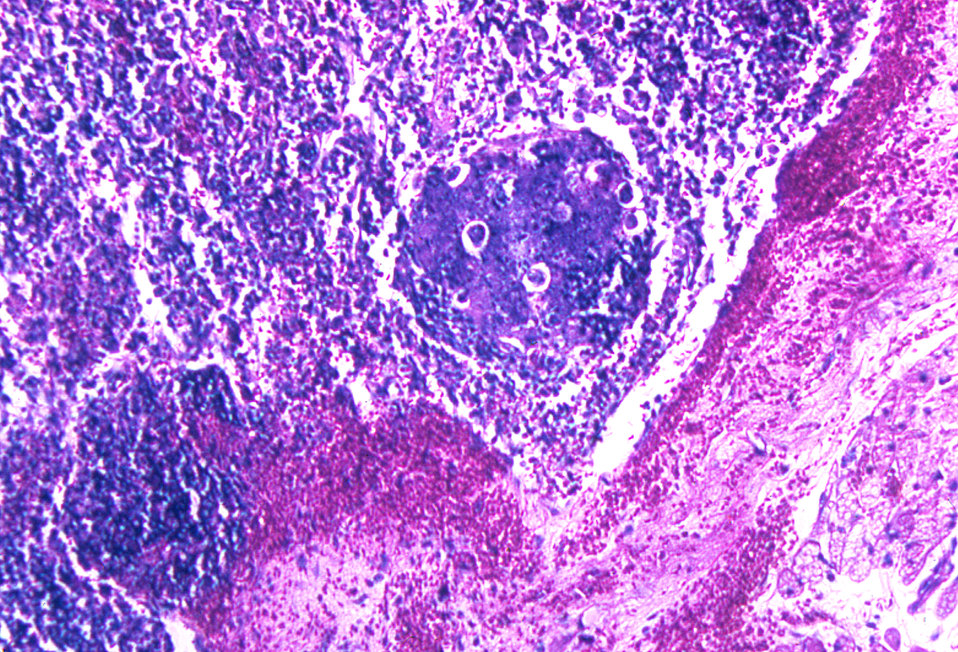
Hemorrhagic lymph node due to inhalation anthrax.